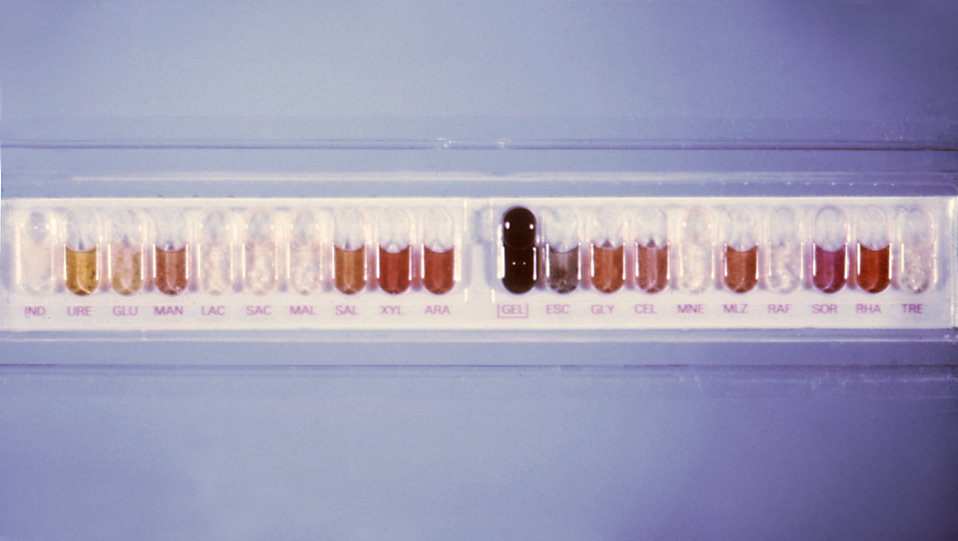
This strip of API� wells was inoculated with Clostridium perfringens.